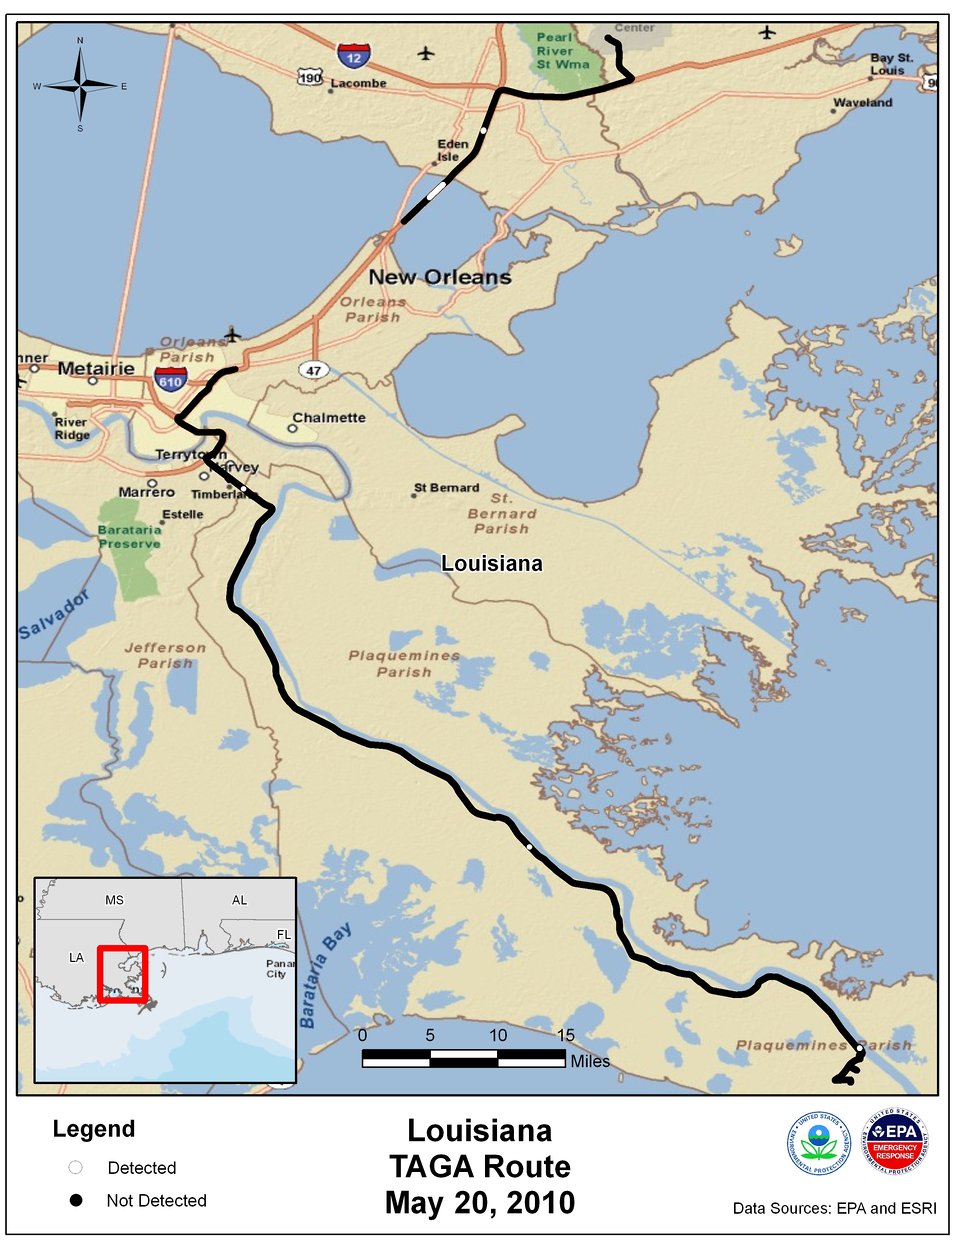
EPA TAGA Air Monitoring Locations May 20, 2010